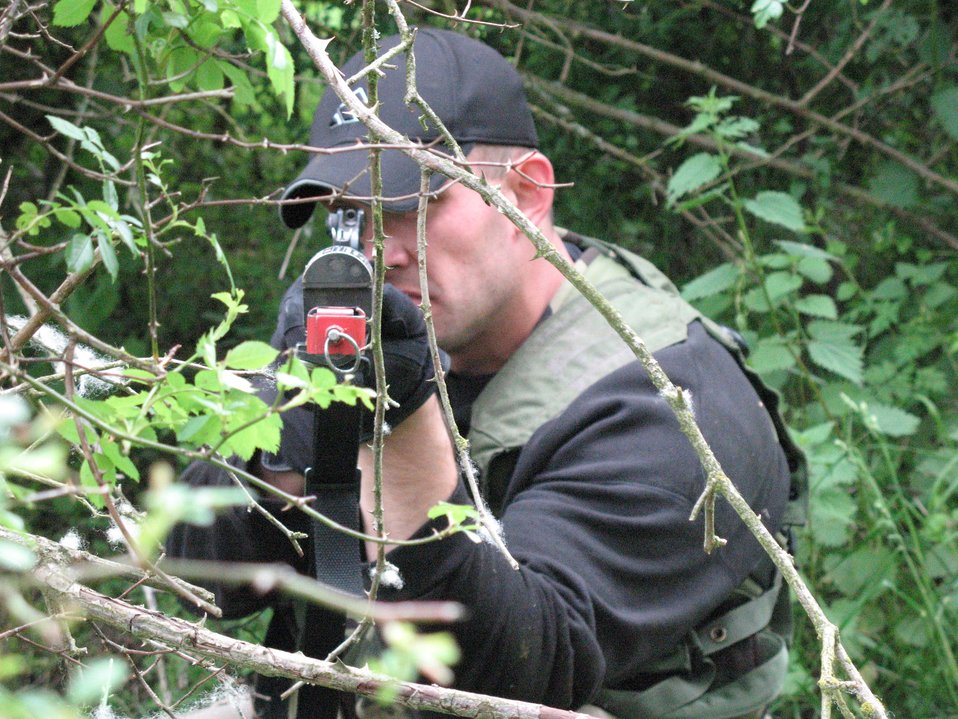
Creek Defender preps security forces for potential battle

Staff Sgt. James Baylis takes aim at a convoy from a hidden position as part of Creek Defender at Baumholder, Germany. The exercise prepares security forces Airmen in U.S. Air Forces in Europe for combat situations they may face while deployed. Sergeant Baylis acts as one of several opposition forces used to test students on their reactions to threats.